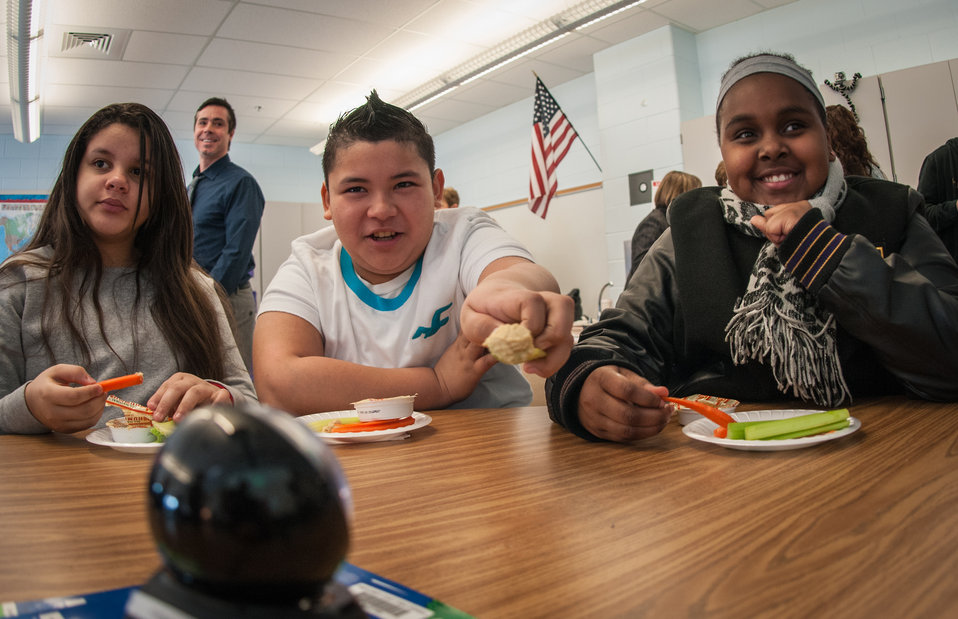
A computer camera, lower left, captures one of Mr. Damien Grasso's Harmony Hills Elementary School 5th grade students, in Silver Spring, MD trying to visually offer hummus on a carrot stick, to viewers at Dalry Primary School, in North Ayershire, Scotland, United Kingdom The students used live overseas video connection, during the inaugural International School Meals Day (ISMD) at Harmony Hills Elementary School in Silver Spring, MD, on Friday, March 8, 2013. The ISMD has 14 classrooms (grades 3-8) in the U.S. connected with 14 classrooms in Scotland. USDA plans to expand the initiative to include partnerships with additional countries in future years. USDA's Food and Nutrition Service oversees the administration of 15 nutrition assistance programs that work in concert to form a national safety net against hunger. Learn more by visiting www.fns.usda.gov and twitter @USDANutrition.